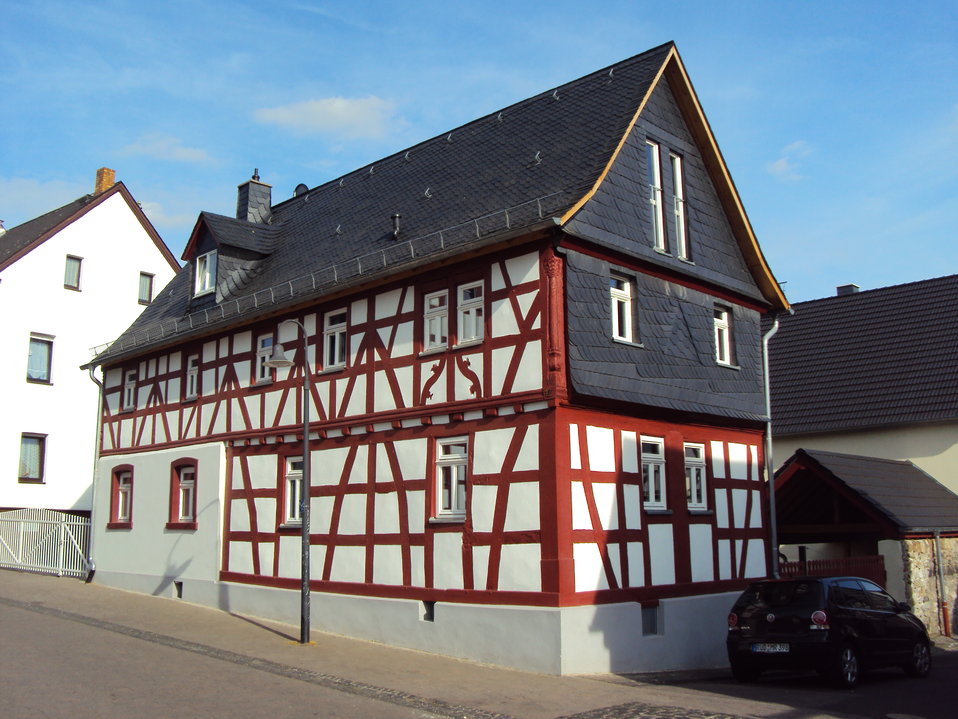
Deutsch: Fachwerkhaus Backhausstraße 12 in Limburg-Offheim This is a picture of the hessian Kulturdenkmal (cultural monument) with the ID 52922